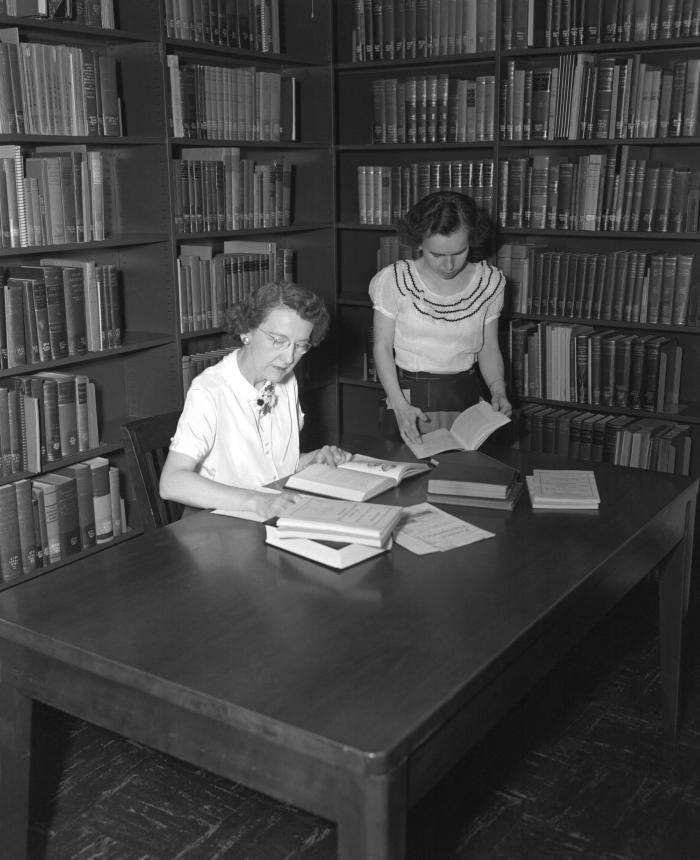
This 1952 photograph showed two Centers for Disease Control employees as they were working in the organization's Chamblee, Georgia campus library, which is also known as the 'CDC Information Center', located in Northeast Atlanta.